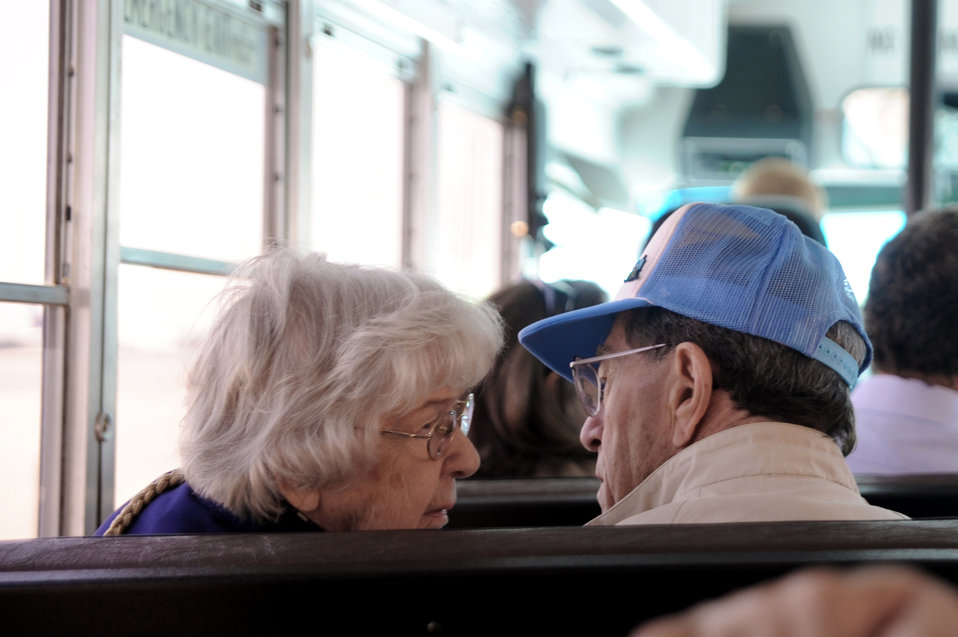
'Hump' pilots mark 65th reunion

Married for more than 60 years, Bill McKarns and his wife speak during the bus ride to the static C-17 Globemaster III May 5, 2011, at Joint Base Charleston, S.C.. Mr. McKarns was a World War II